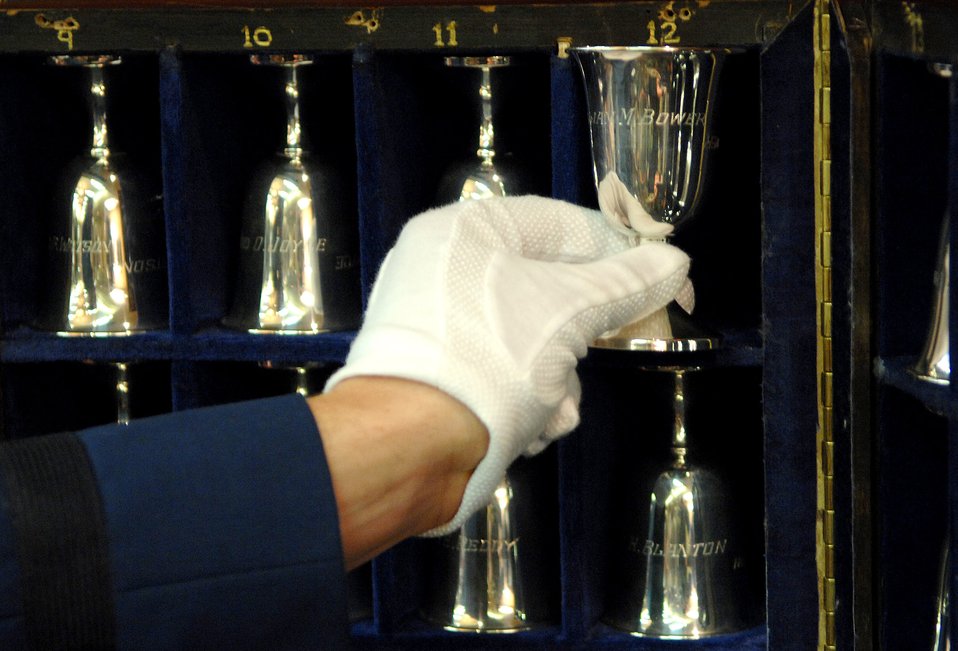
Raider goblet ceremony

Cadet 1st Class Scott Crellin removes a goblet from its case during a goblet ceremony April 18 in San Antonio. Two cadets are responsible for guarding the Doolittle Tokyo Raiders goblets when they are on display during reunions. This reunion marks the 65th Anniversary of the Tokyo Raid in 1942. There are 80 goblets representing all 80 Doolittle Raiders. When a Raider dies, his goblet is turned over in the case. When there are but two Raiders left, the two men will open a bottle of cognac, vintage 1896 (the year Doolittle was born) give a final toast to their departed comrades. Fourteen of the 80 Raiders are still alive.